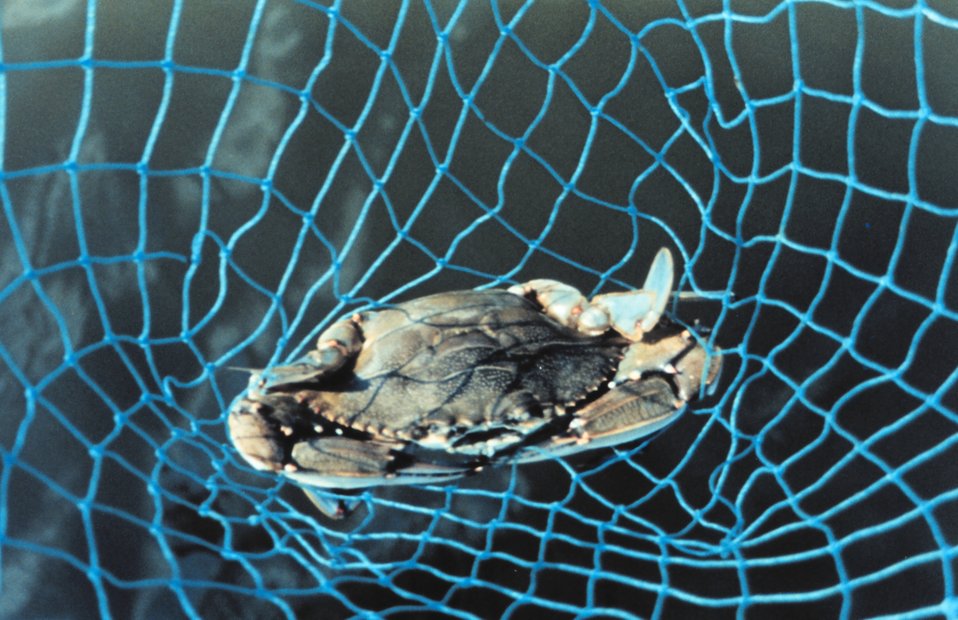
A Maryland Blue Crab, Callinectes sapidus, caught in a hand net.